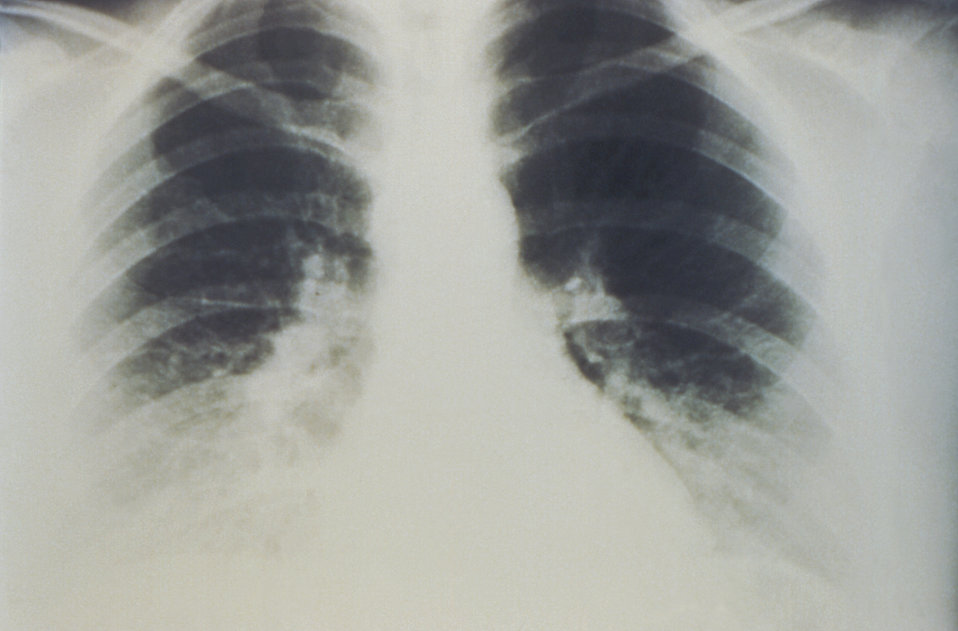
This AP chest x-ray reveals the early stages of bilateral pulmonary effusion due to Hantavirus pulmonary syndrome, or HPS.